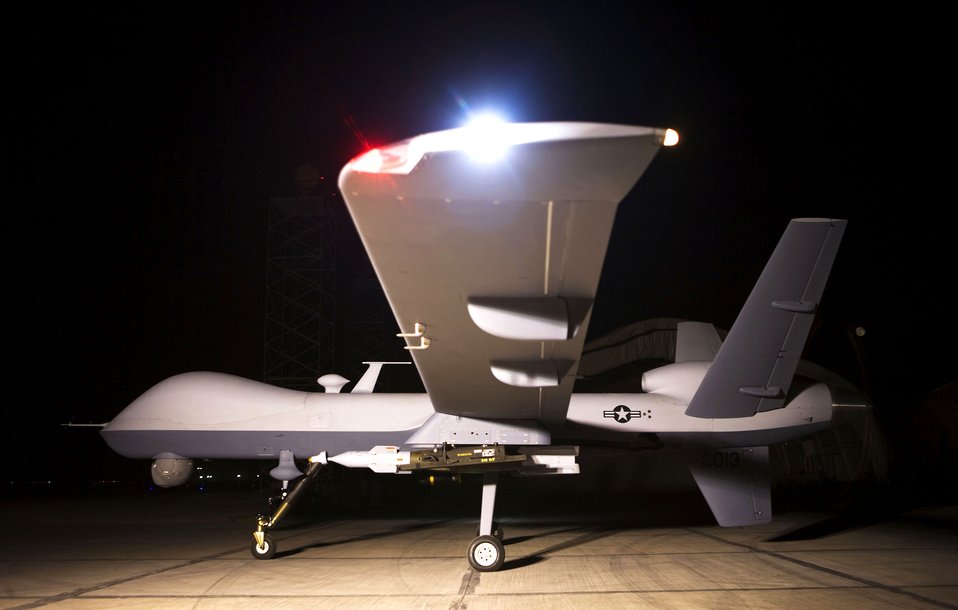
Air Force's hunter-killer UAV now flying in Afghanistan

An MQ-9 Reaper sits on a ramp in Afghanistan Oct. 1. The Reaper is launched, recovered and maintained at deployed locations, while being remotely operated by pilots and sensor operators at Creech Air Force Base, Nev.